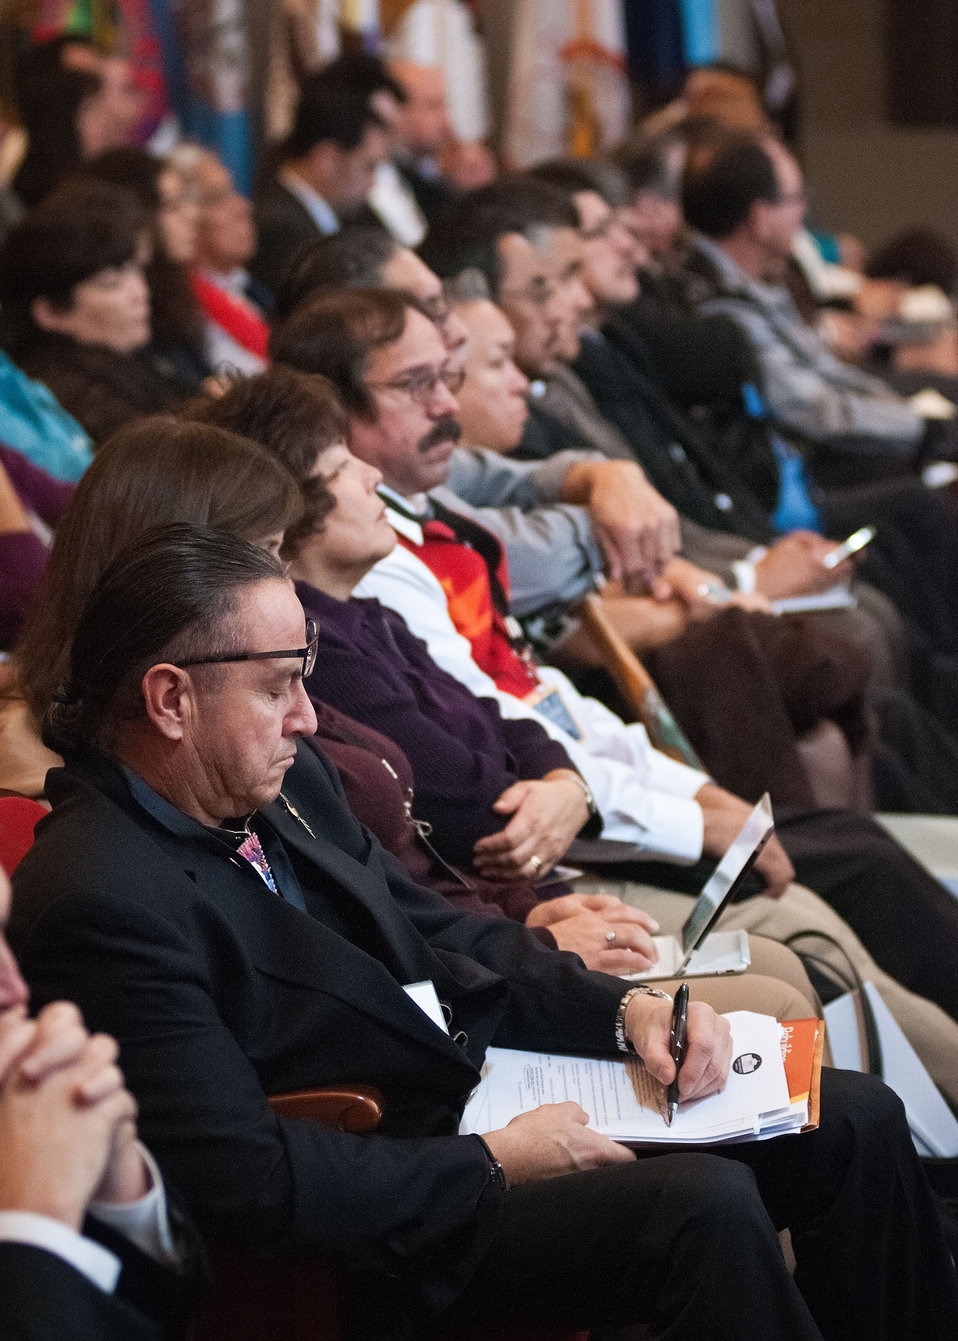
Members of Native American Tribal Nations attended the 2012 Fourth Annual White House Tribal Nations Conference at the U.S. Department of Interior in Washington D.C. on Wednesday, Dec. 5, 2012. Cabinet members Interior Secretary Ken Salazar, Agriculture Secretary Tom Vilsack, Education Secretary Arne Duncan, Treasury Deputy Secretary Neal Wolin, Commerce Acting Secretary Rebecca Blank, Health and Human Services Secretary Kathleen Sebelius discussed the gains and progress of the Obama Administration concerning Native American Tribal Nations.